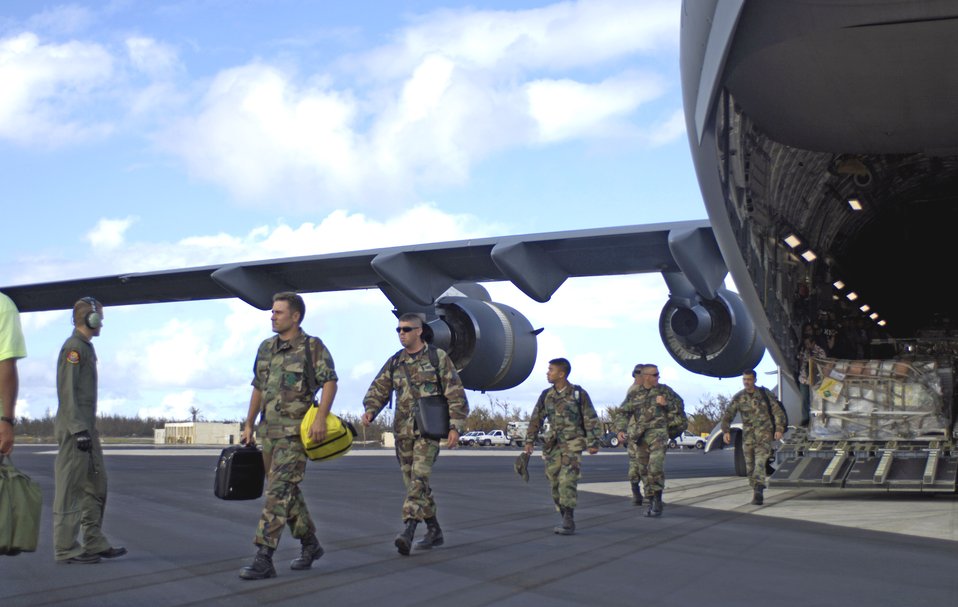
Teams fly to Wake Island to assess damage

Airmen, part of a 53-person assessment team, get off a C-17 Globemaster III at Wake Island Sept. 12. The team is assessing damage left by Super Typhoon Ioke after it struck the island Aug. 31.